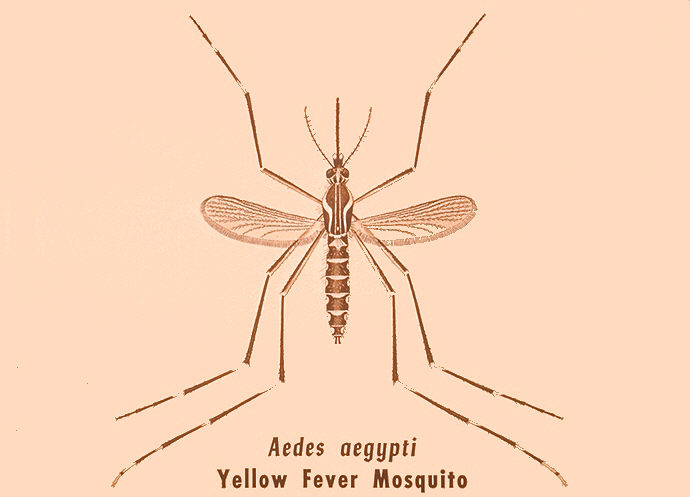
Illustration of Aedes aegypti adult mosquito, vector of yellow fever.